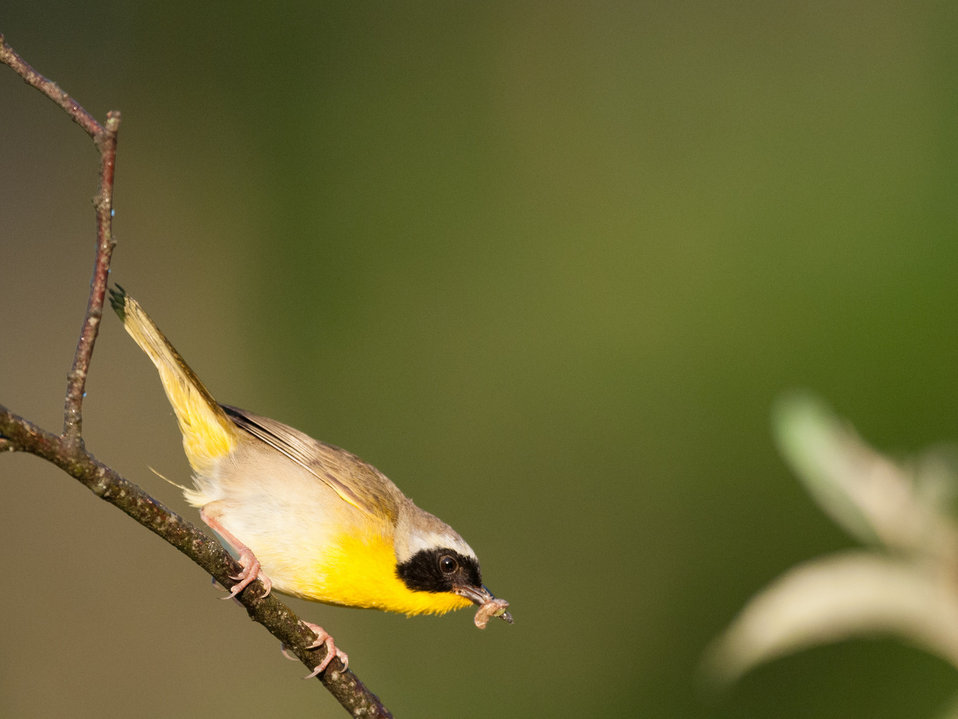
Common Yellowthroat preparing to feed nestlings.